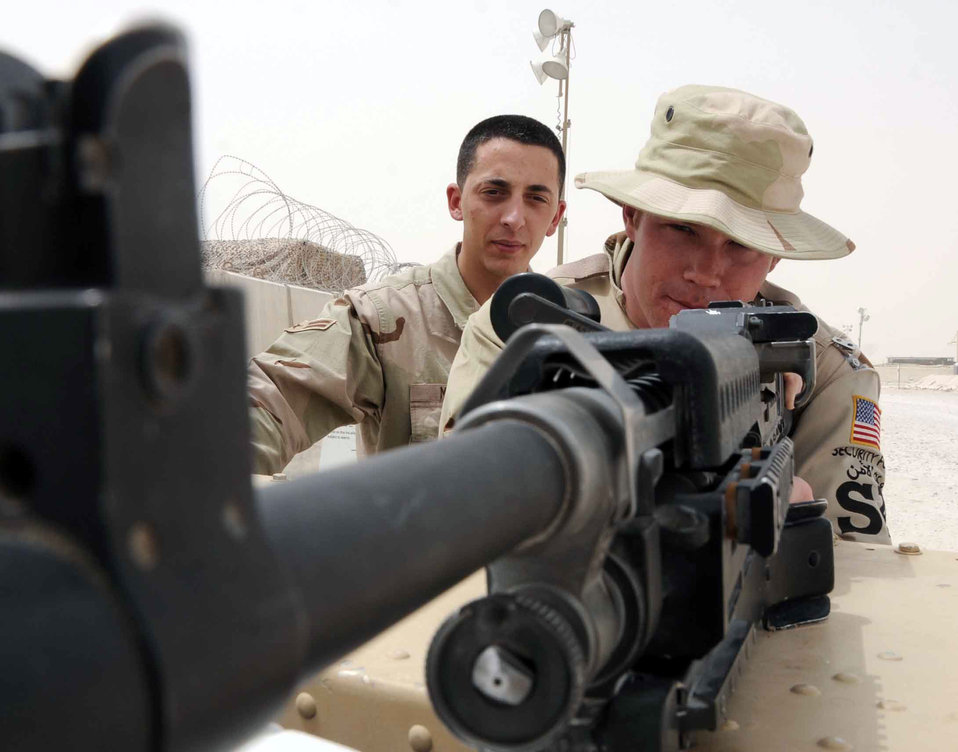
Cadets experience real-world deployment

Airman 1st Class David Metter instructs Air Force Academy Cadet Brian Gilliam June 17 on the proper handling of a M240B machine gun at a base in Southwest Asia. Cadet Gilliam supports the weight of the gun on the back of a humvee near the entry control point to the flightline. The cadets are visiting the base as part of the academy's Operation Air Force program, allowing them to experience an active-duty deployment.